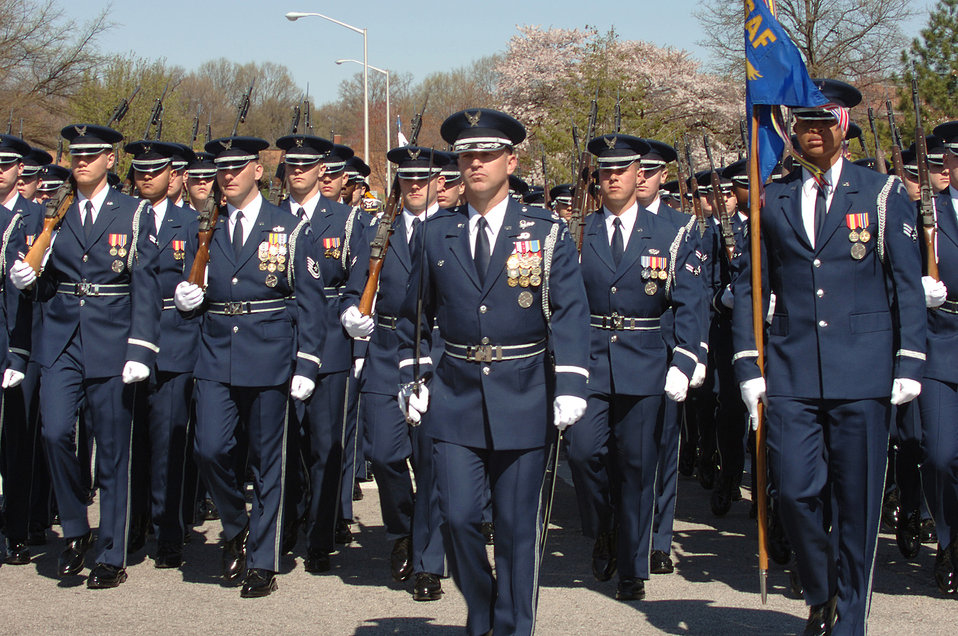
Weinberger tribute

The U.S. Air Force Honor Guard escorts the casket containing former Secretary of Defense Caspar Weinberger from a memorial service in the Memorial Chapel to his final place of rest at Arlington National Cemetery, Arlington, Va., April 4, 2006. Secetary Donald H. Rumsfeld delivered remarks during the memorial service.